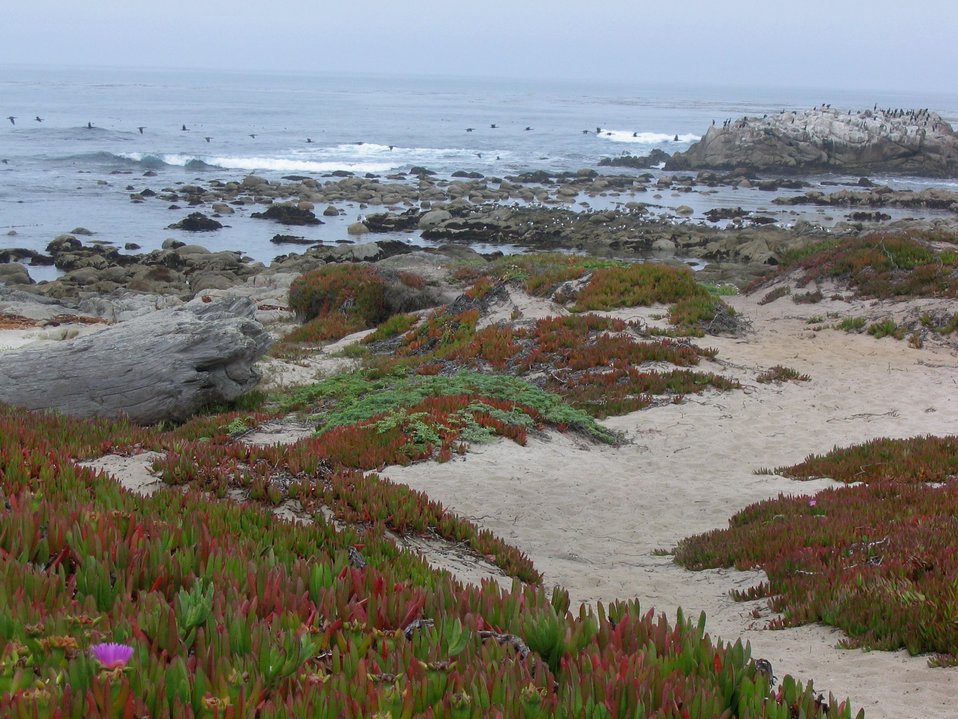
Iceplant (Carpobrotus edulis), rocky outcrops and cormorants at Asilomar State Beach.